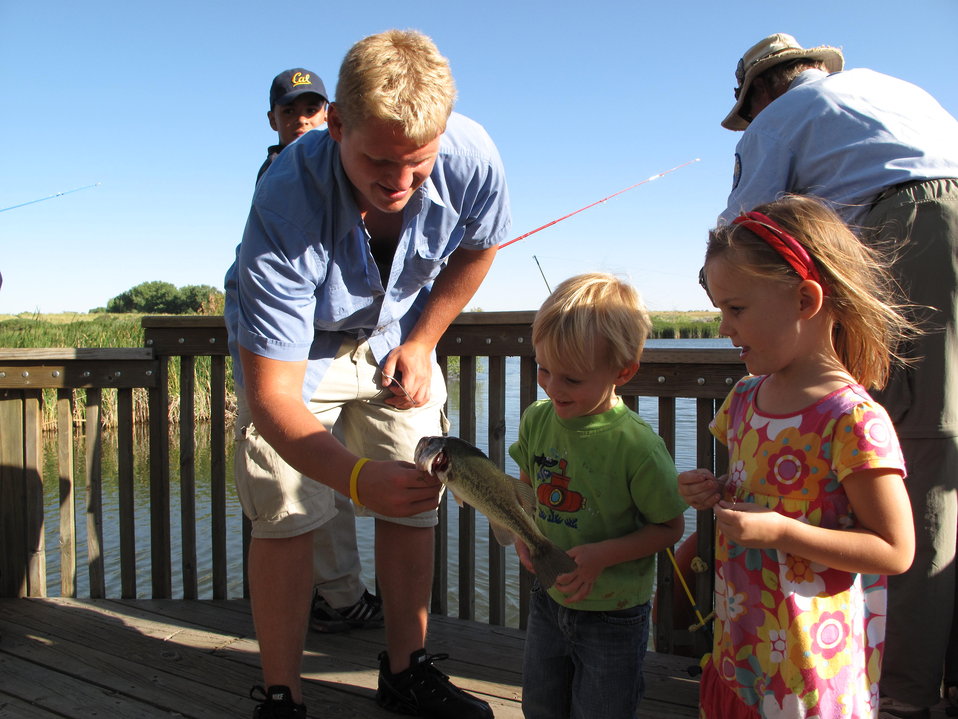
ELK fishing trip to RM Arsenal

The great volunteers helping the children handle their fish!